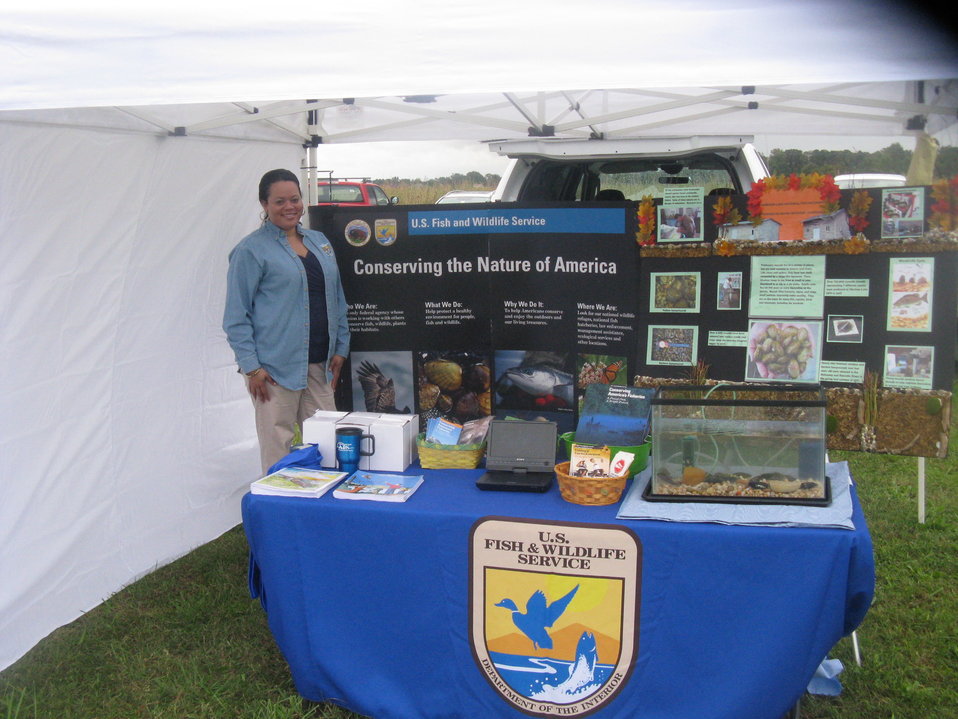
Rappahannock River Valley NWR 15th Anniversary

USFWS Virginia Fisheries Coordinator Office display at 'Go Wild!'